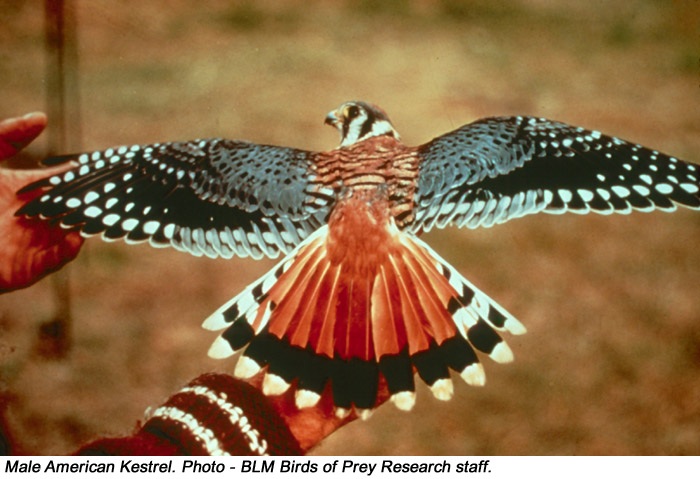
American Kestrel Birds of Prey Wildlife